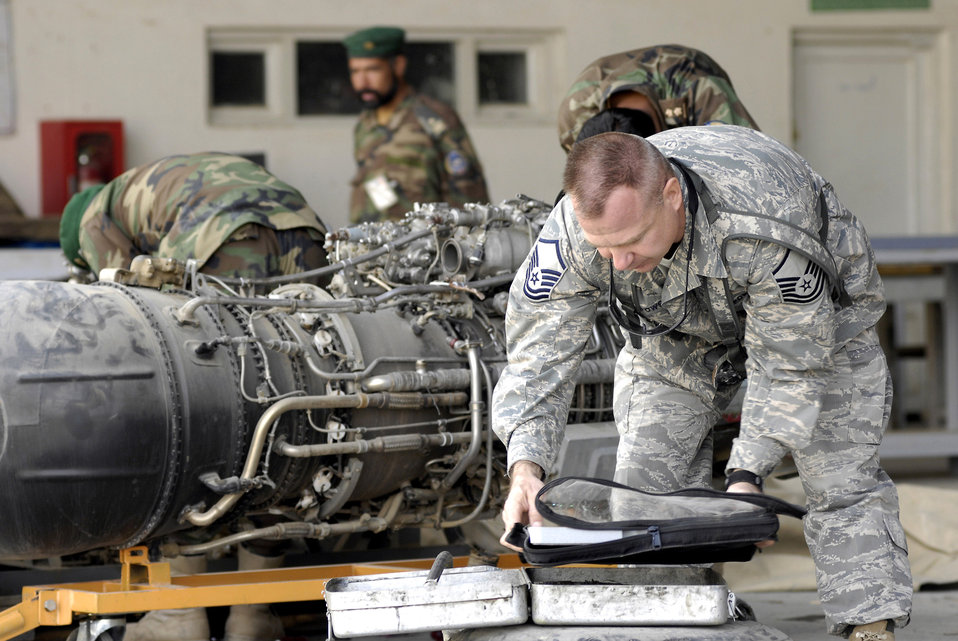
Joint team helps build Afghan air corps

Master Sgt. George Lewandowski looks over a tool kit created for the Afghan national army air corps aircraft maintenance section Oct. 18 at Kabul Air Field, Afghanistan. The kits help the maintainers keep track of their tools as well as aid in engine safety. Sergeant Lewandowski, an ANA air corps mentor, is a precision measurement equipment laboratory Airman in charge of the tool accountability program at Kabul International Airport. He is deployed here from Eglin Air Force Base, Fla.